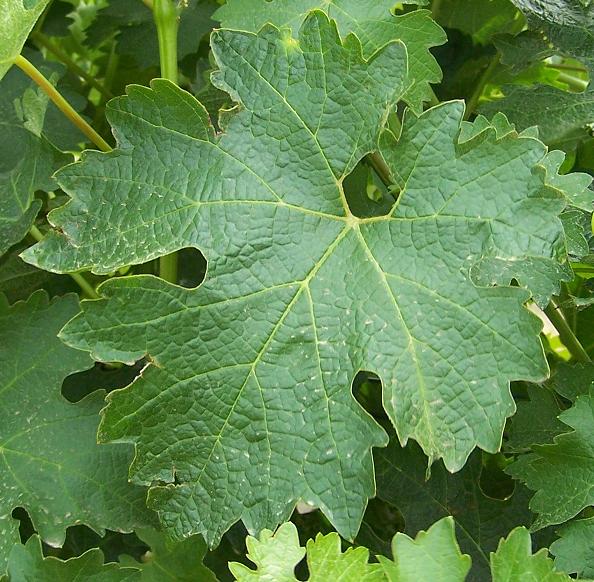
Cabernet Sauvignon leaf from Hedges Vineyard in Red Mountain AVA. Photo taken Sunday, June 20th, 2007 with Kodak z650